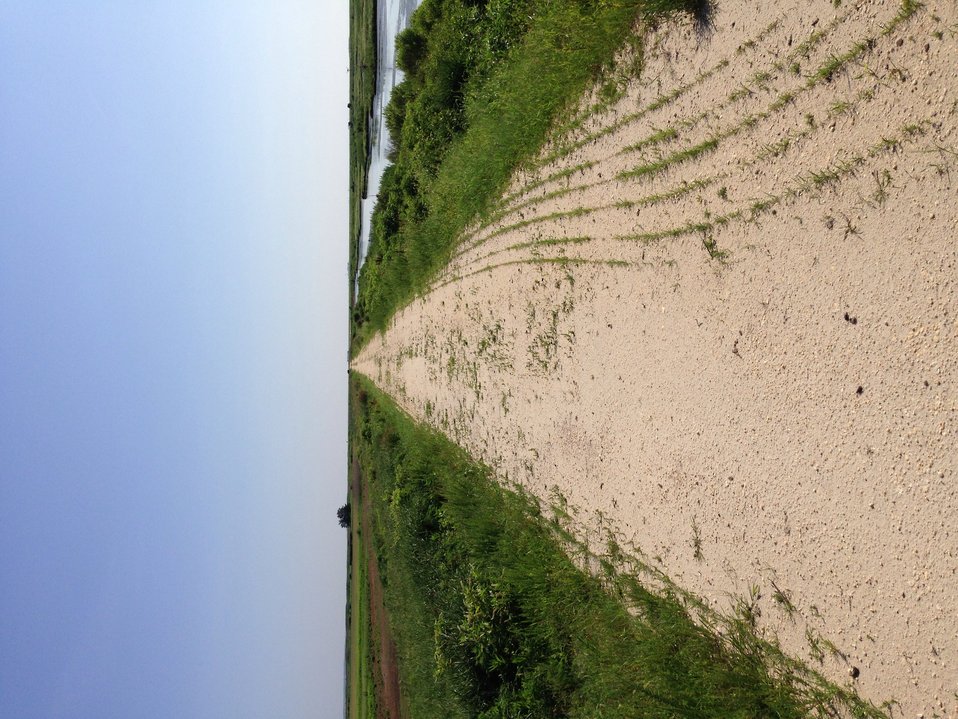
Forsythe wildlife drive after hurricane repairs

Cross dike looking north.